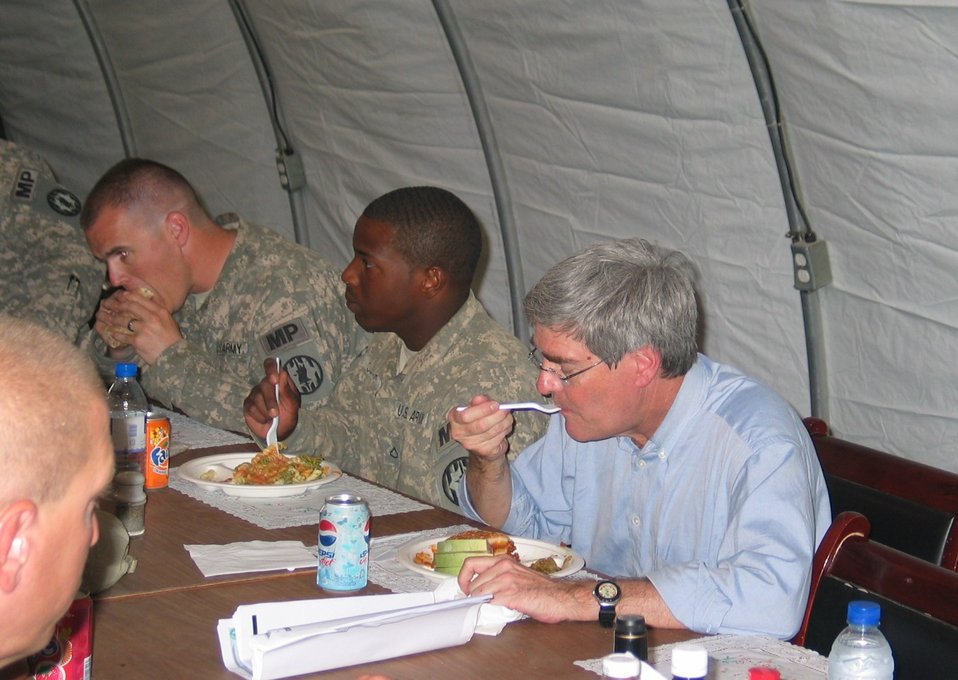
CODEL Berman